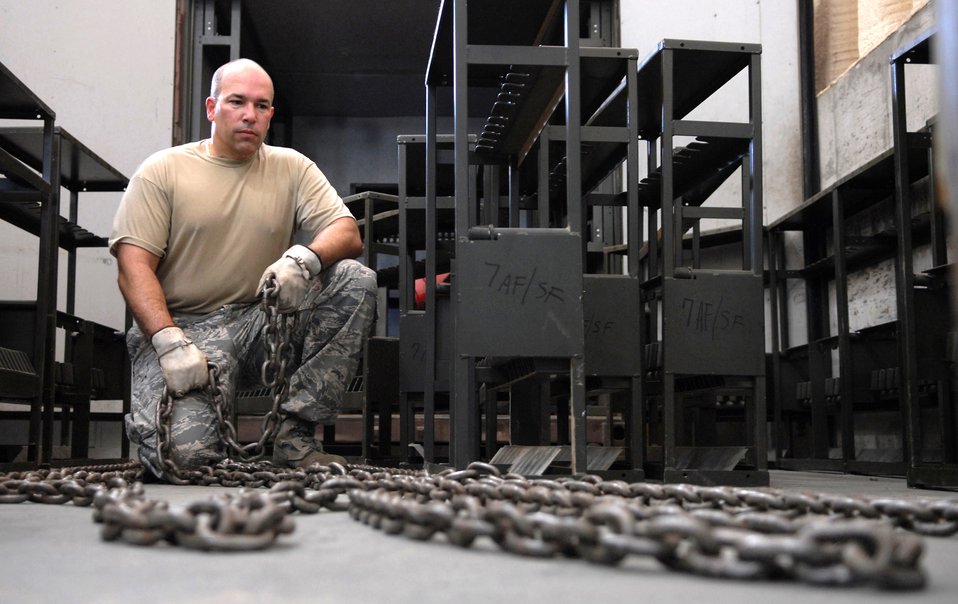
Preparing a city

Master Sgt. Michael Cohen lays out chains to connect rifle racks together at Rush Park July 28 at Osan Air Base, South Korea July 28. Sergeant Cohen is setting up the racks in preparation for Ulchi Freedom Guardian, a joint bilateral exercise set to start in August. More than 550 military members will participate in the exercise. Sergeant Cohen is the armory NCO in charge, and is deployed from Homestead Air Reserve Base, Fla.